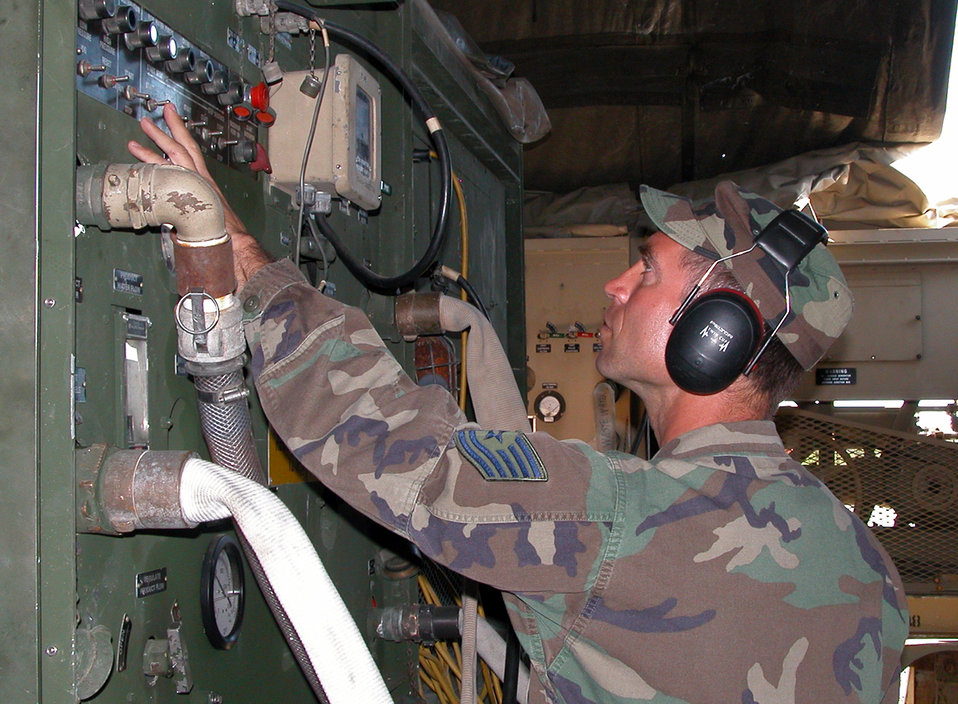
Airmen provide support during Operation Alaskan Road

CAMP WY-WUH, Alaska -- Tech. Sgt. Brian Geske checks pressure gauges and production flow on a reverse osmosis water purification unit. The unit purifies the water from a local stream and then pumps it into storage bladders for camp use. Sergeant Geske is deployed here supporting Operation Alaskan Road from the Kansas Air National Guard's 190th Civil Engineer Squadron.